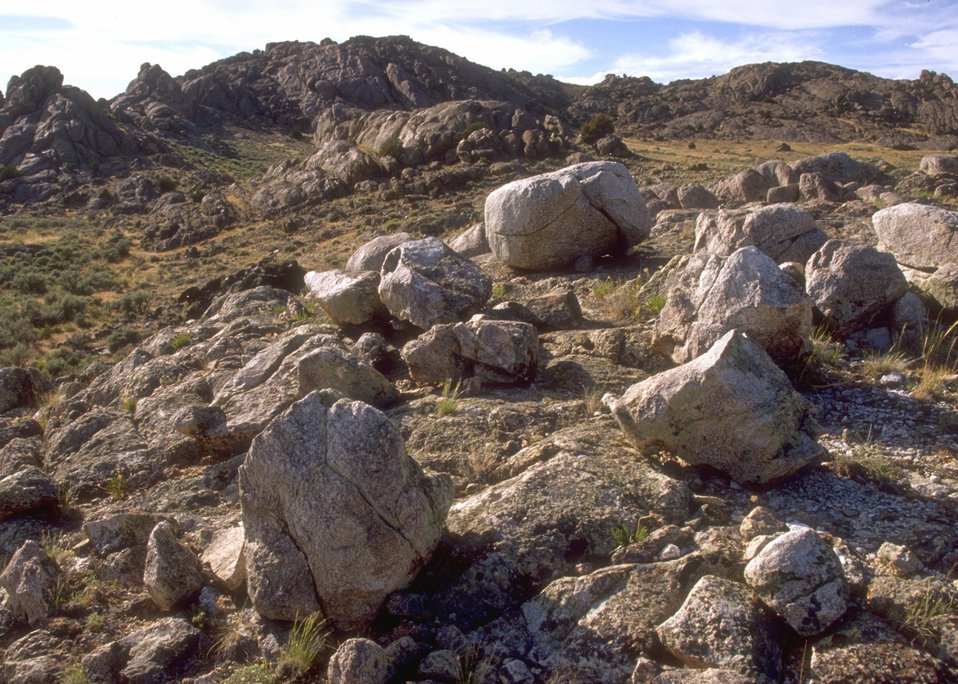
Landscape along the Alcova/Seminoe Back Country Byway, Rawlins Field Office.